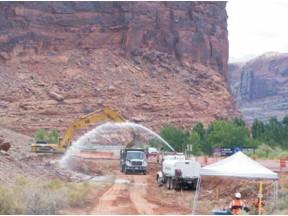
Moab site

The National Park Service owns the property north of the northern Moab site boundary. The entrance to Arches National Park in Utah is located less than 1 mile northwest of the site. Two small National Park Service parcels have contamination on the surface soil and will be cleaned up during remediation of the highway rights-of-way.